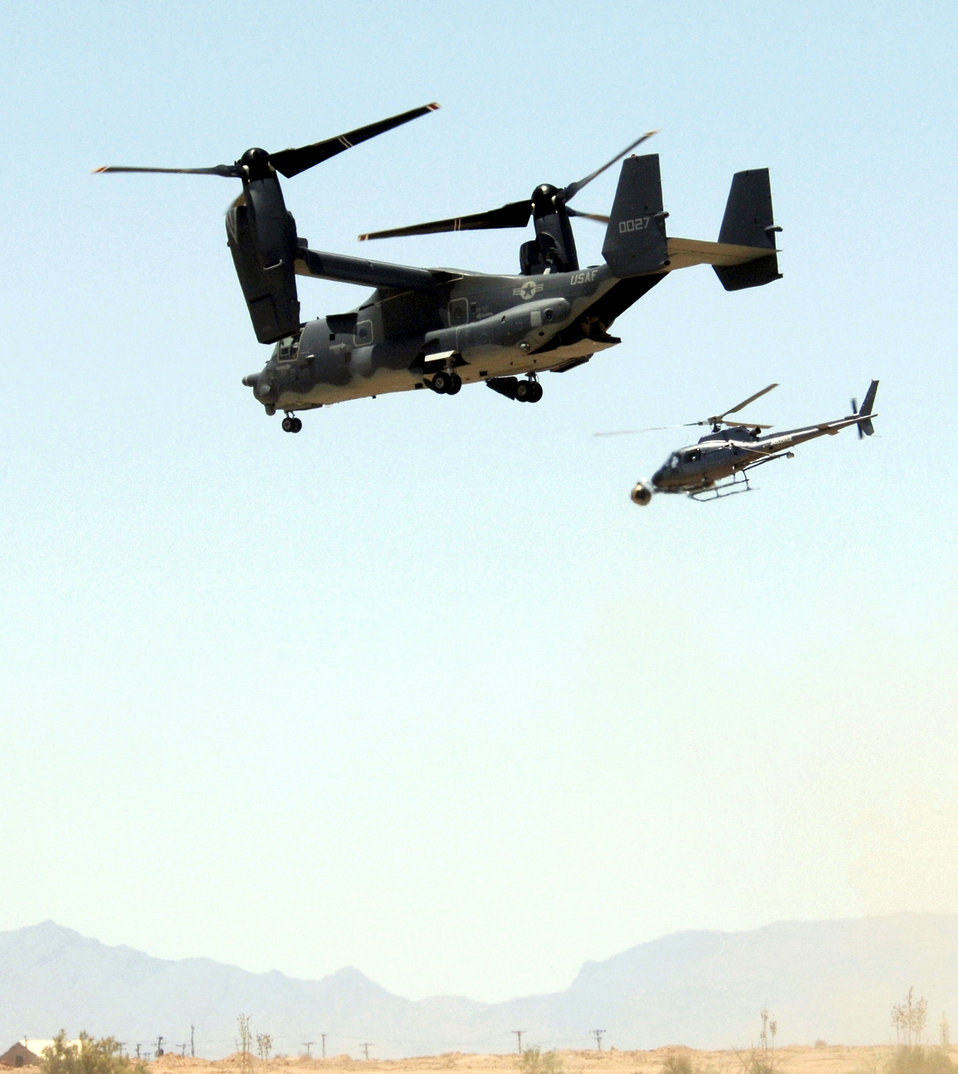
Ospreys in flight

A camera onboard a helicopter films an Air Force CV-22 Osprey as it takes off from Holloman Air Force Base, N.M., on Friday, May 26, 2006. The Osprey and its crew are taking part in the filming of the movie,